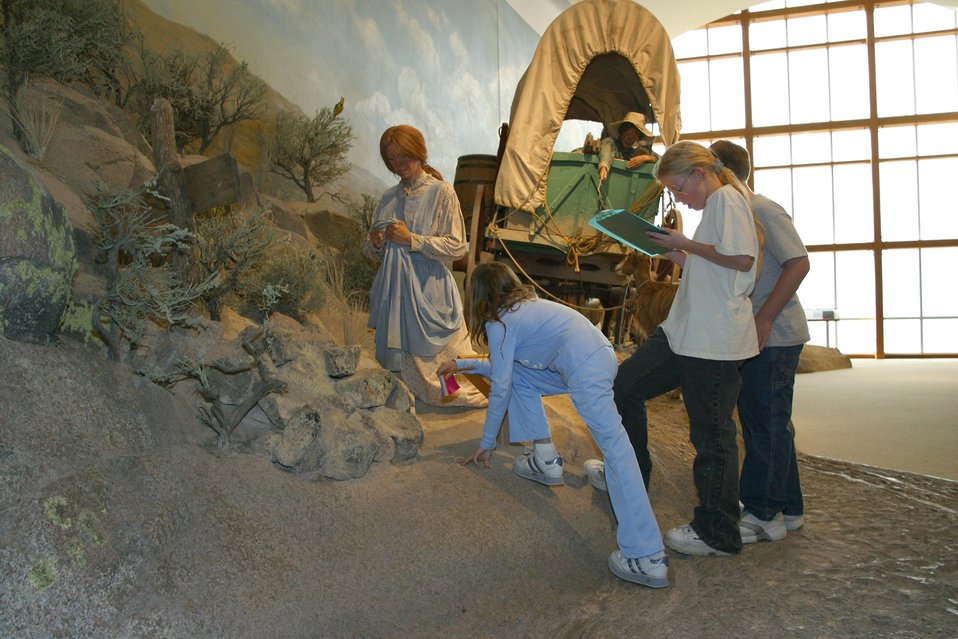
Hundreds of school children visit the National Historic Oregon Trail Interpretive Center every year.